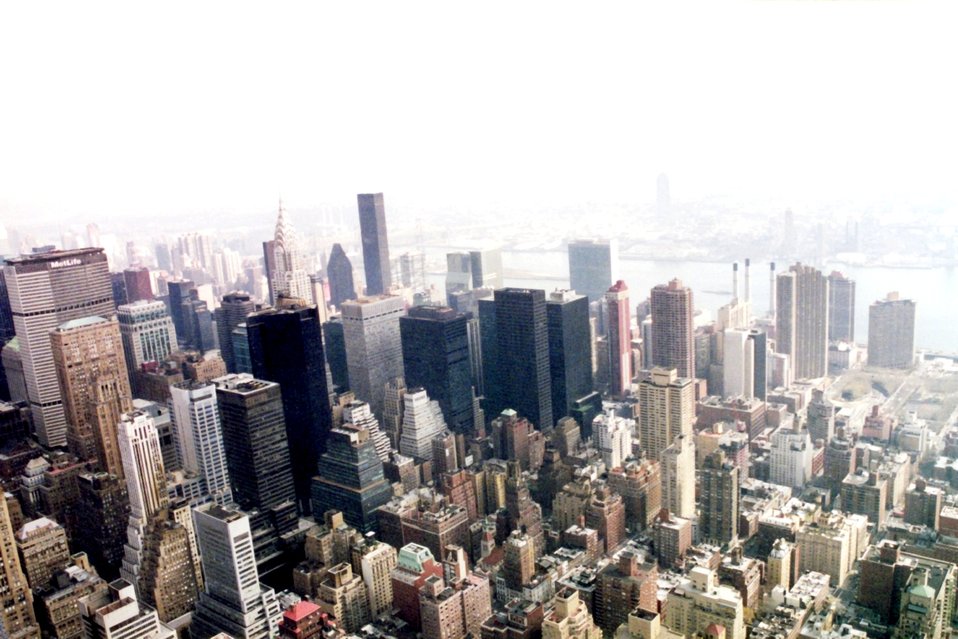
New York skyline from above.